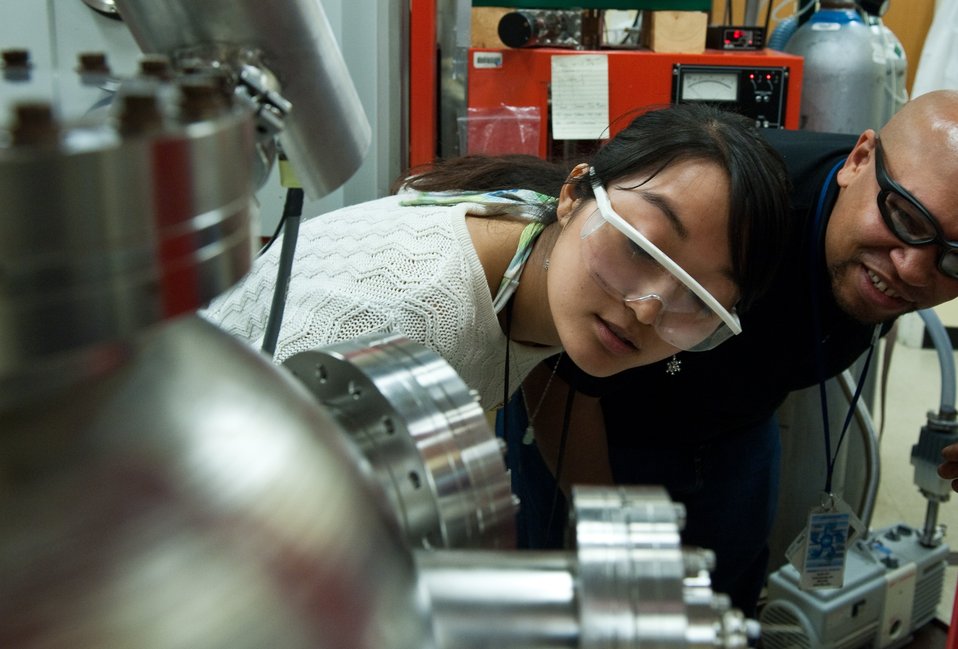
Solar Researchers in the Lab

NREL scientists Ki Ye and Joe Berry peer into the glass siding of a deposition instrument to view the latest results of an experiment with a new material.